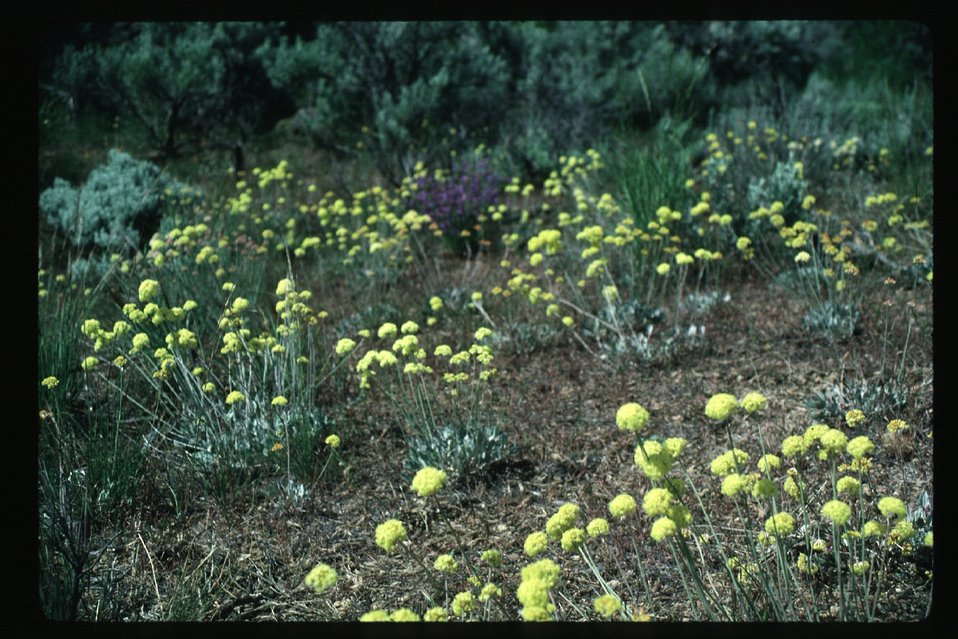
Buckwheat Scenic Wildflowers Vegetation Grass and brush USRD Upper Snake River District